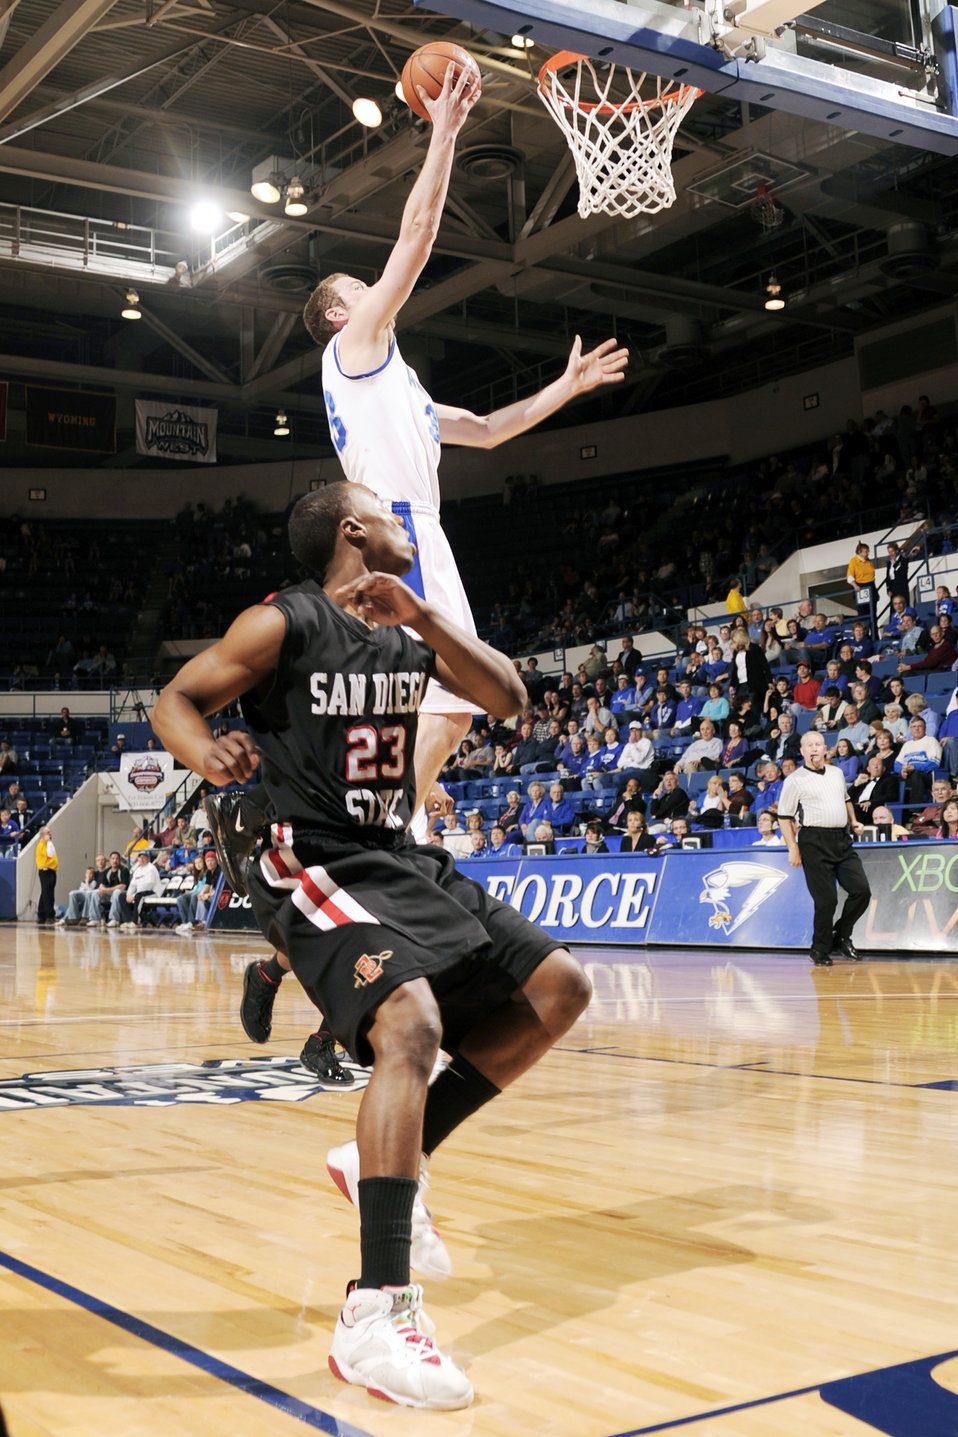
Air Force basketball falls to San Diego, 61-42.

Falcon Mike McLain, a senior center, goes up for a basket during the Falcon's game against San Diego March 6, 2010, at the U.S. Air Force Academy's Clune Arena in Colorado. McLain led the Falcons with 10 points. Air Force fell to San Diego 61-42.